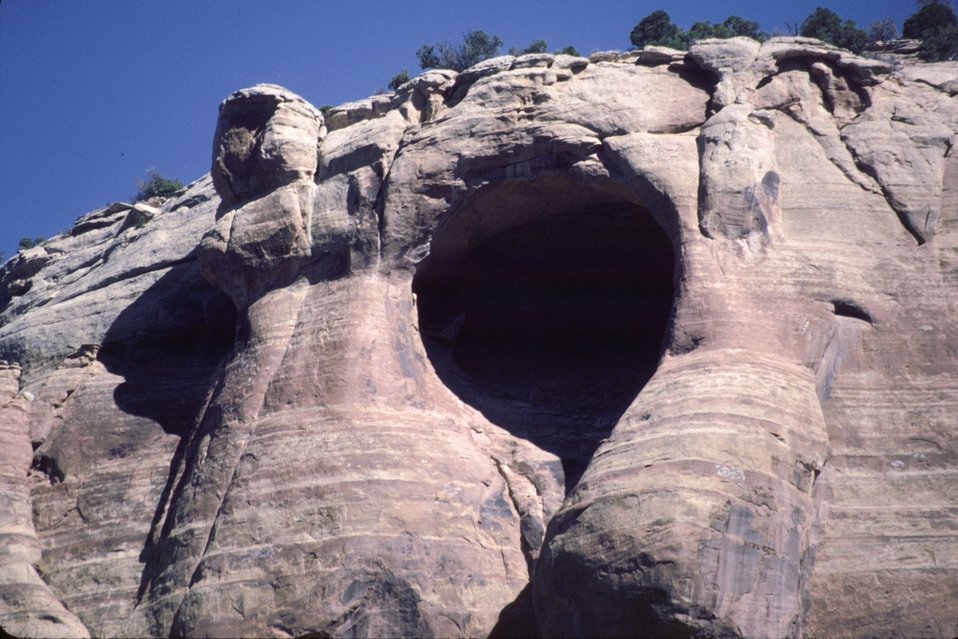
High above in Mee Canyon